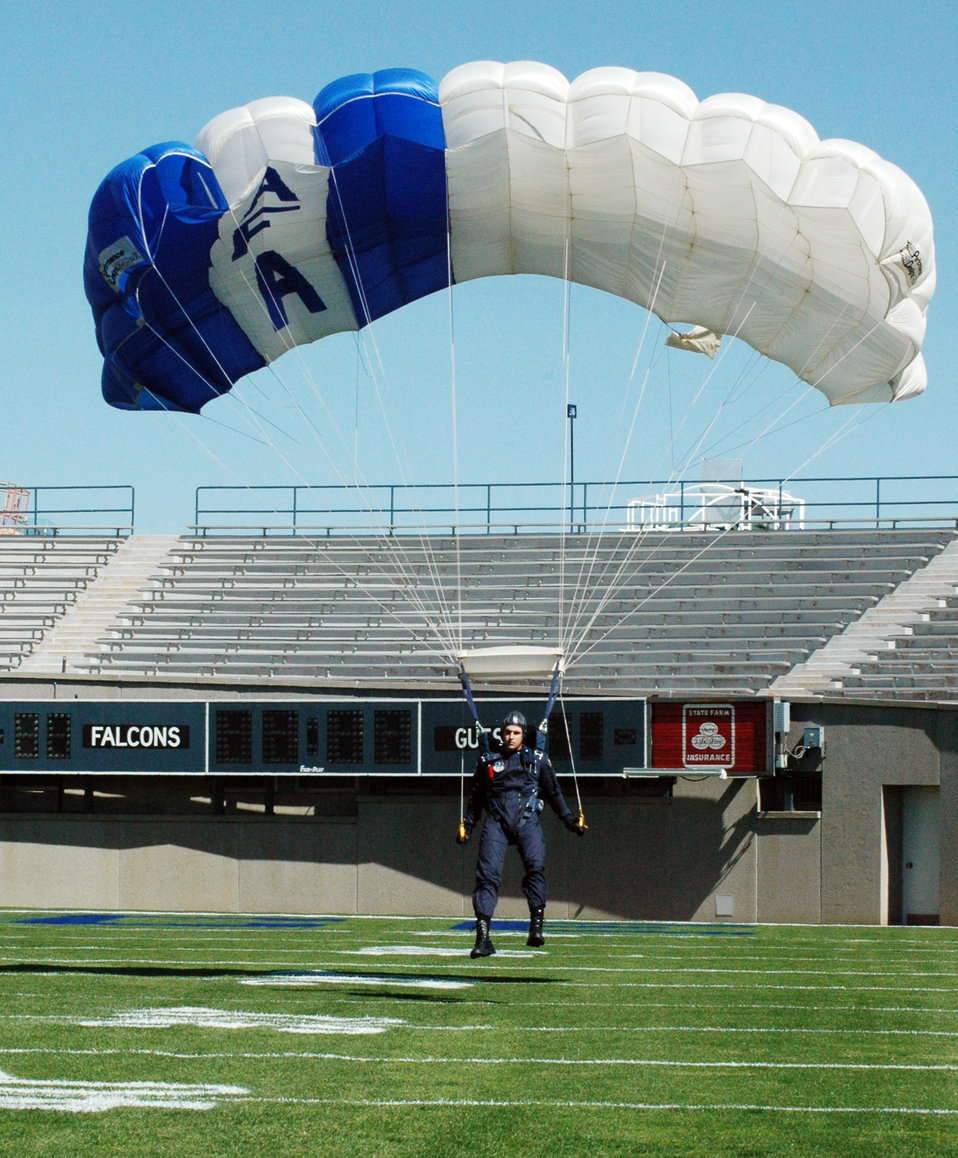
Wings of Blue

U.S. AIR FORCE ACADEMY, Colo. -- Cadet 1st Class Tom Sacchieri prepares for a soft landing on the 20-yard line during a